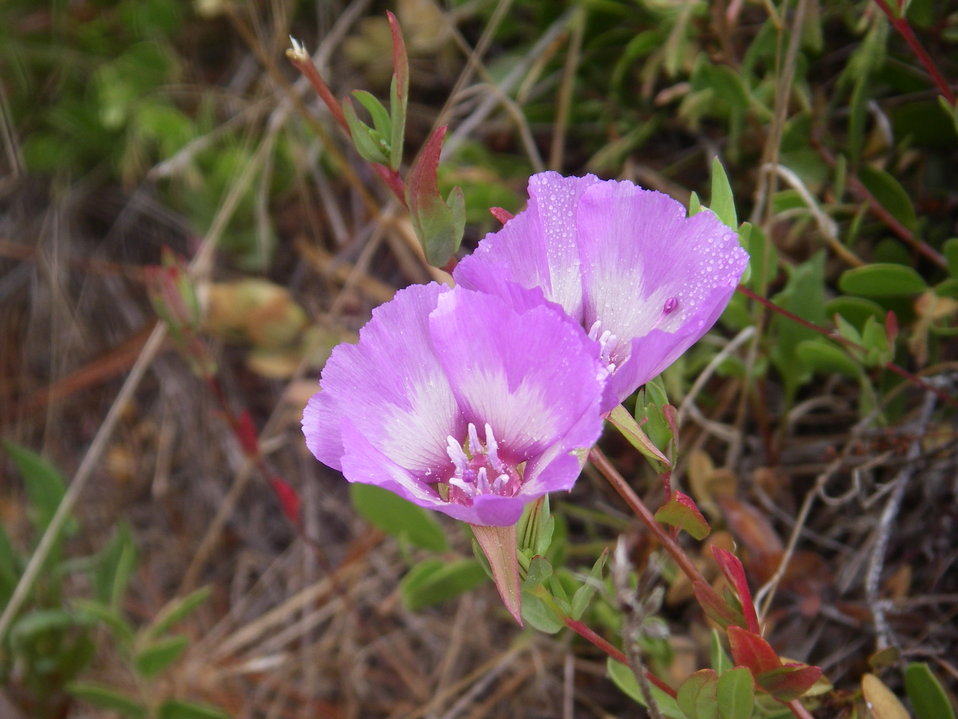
Vine Hill clarkia at VH Preserve, Sonoma County CA